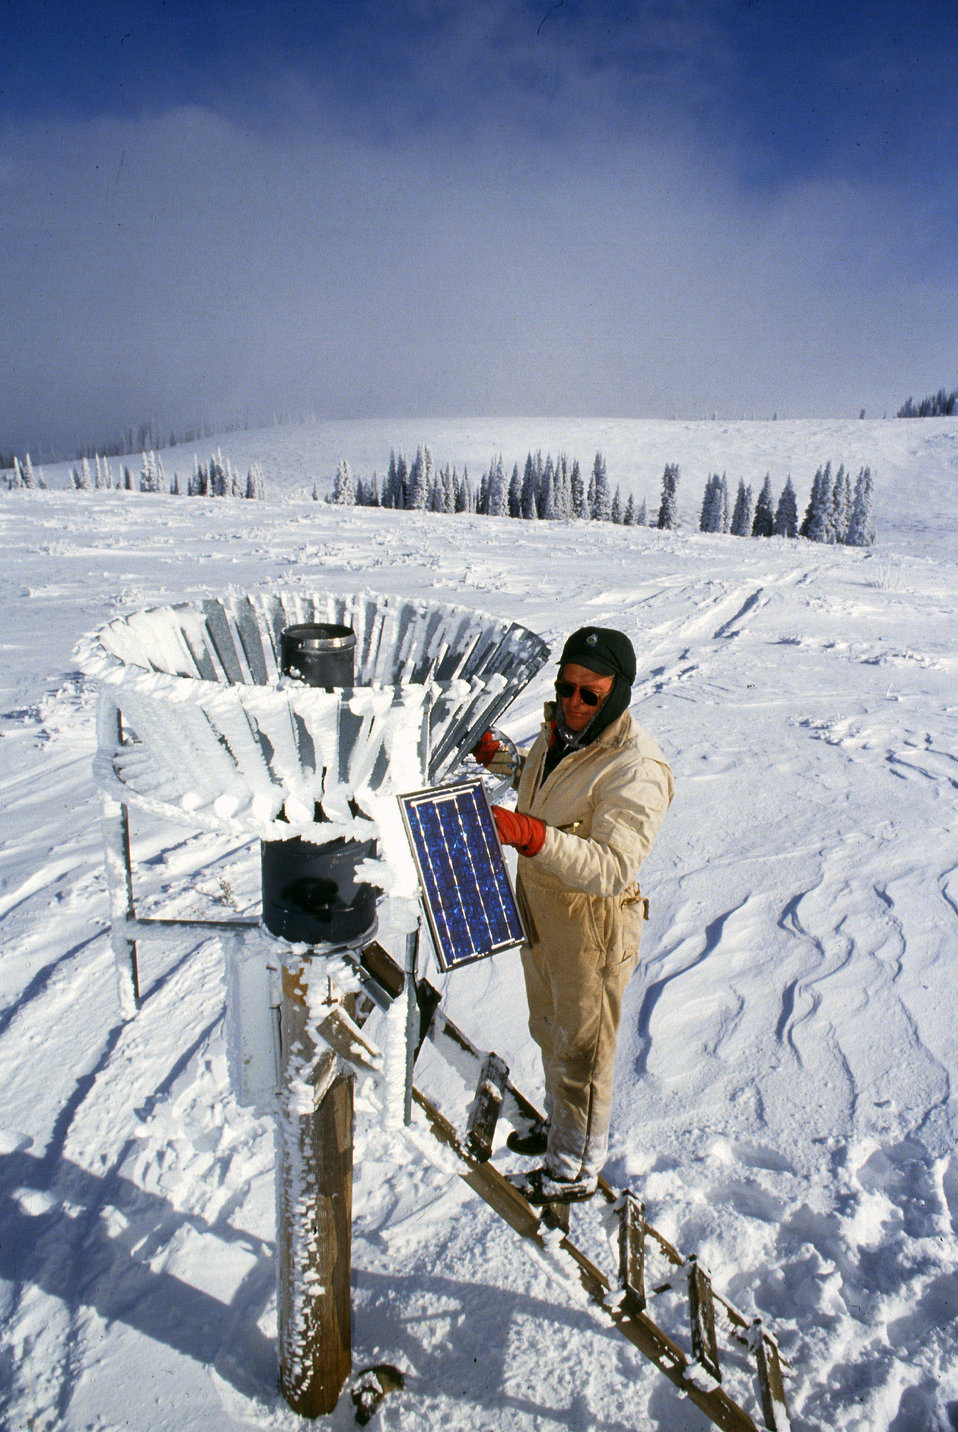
U.S. Department of Agriculture (USDA) Agricultural Research Service (ARS) scientist uses this water measurement device to estimate the volume of water contained this southwestern Idaho snowpack, which is vital to forecasting how much water will be available for agricultural and other uses.